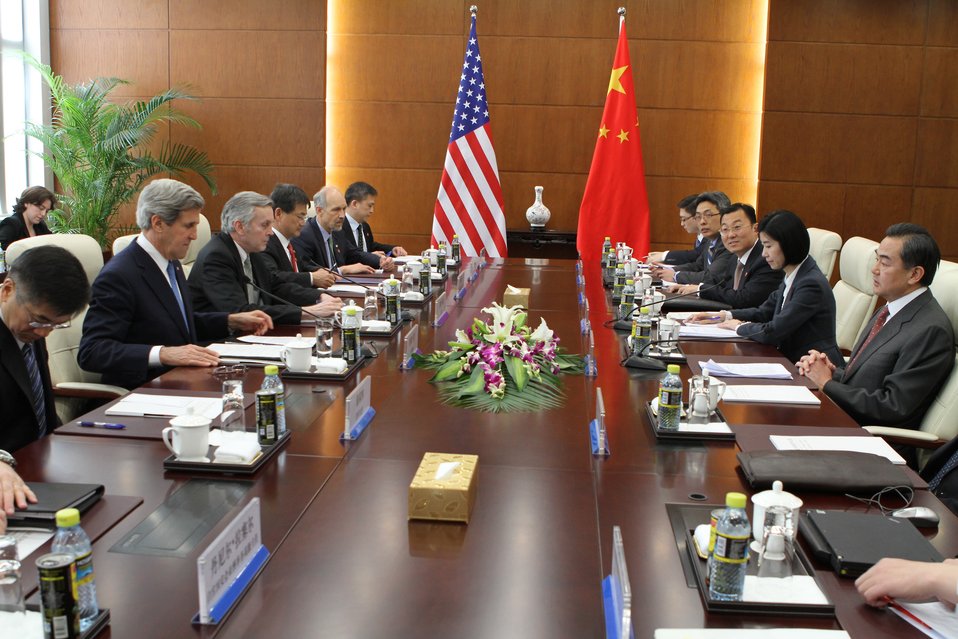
Secretary Kerry Speaks with Chinese Foreign Minister Wang Yi

U.S. Secretary of State John Kerry speaks with Chinese Foreign Minister Wang Yi at the beginning of a bilateral meeting in Beijing, China, on April 13, 2013.